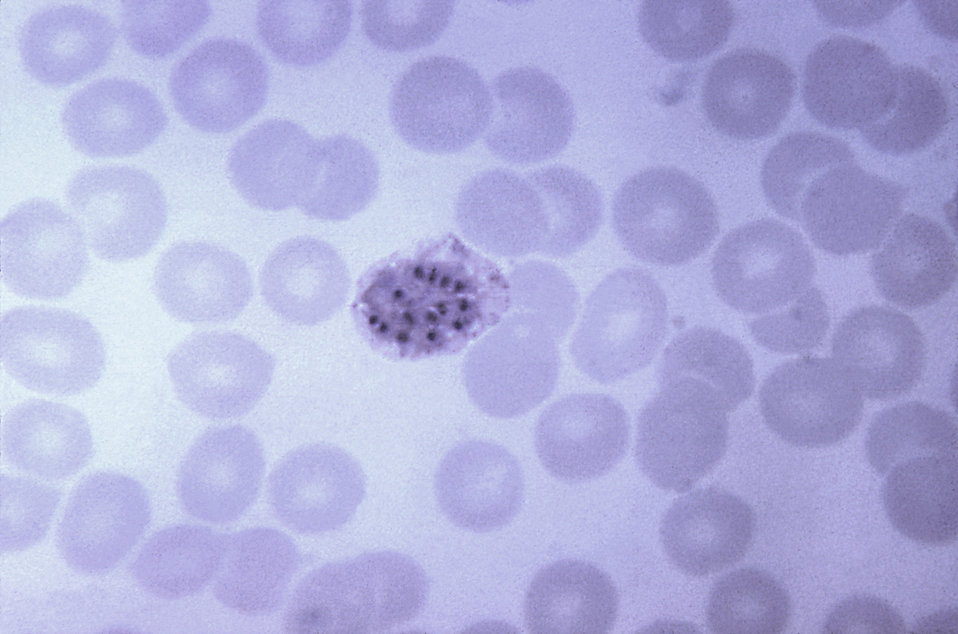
This thin film blood smear micrograph depicts an immature P. vivax schizont with 14 chromatin masses; Magnified 1125X.